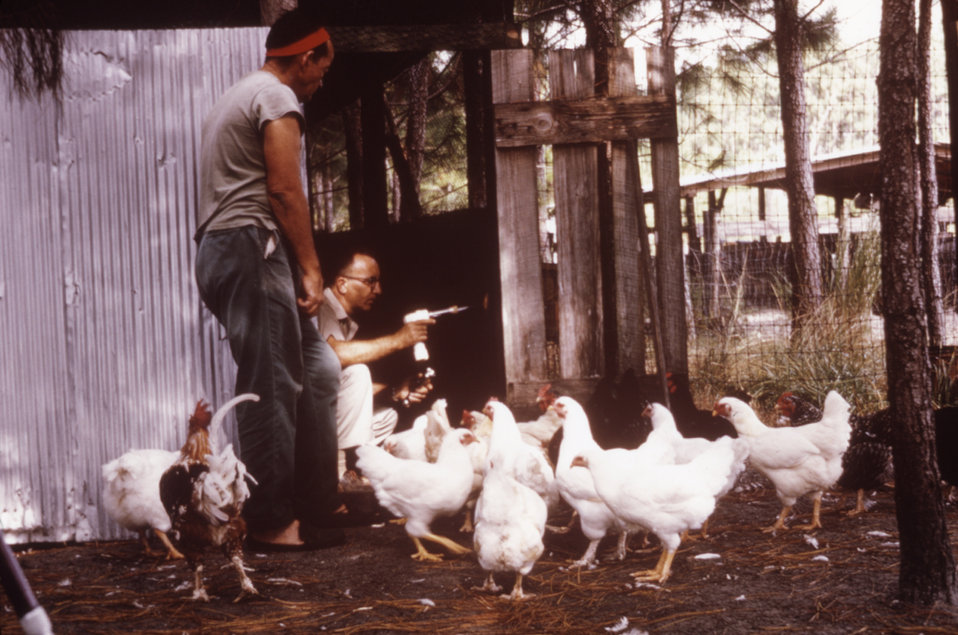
This CDC field researcher was using a mechanical aspirator in order to collect mosquitoes behind a chicken coop.